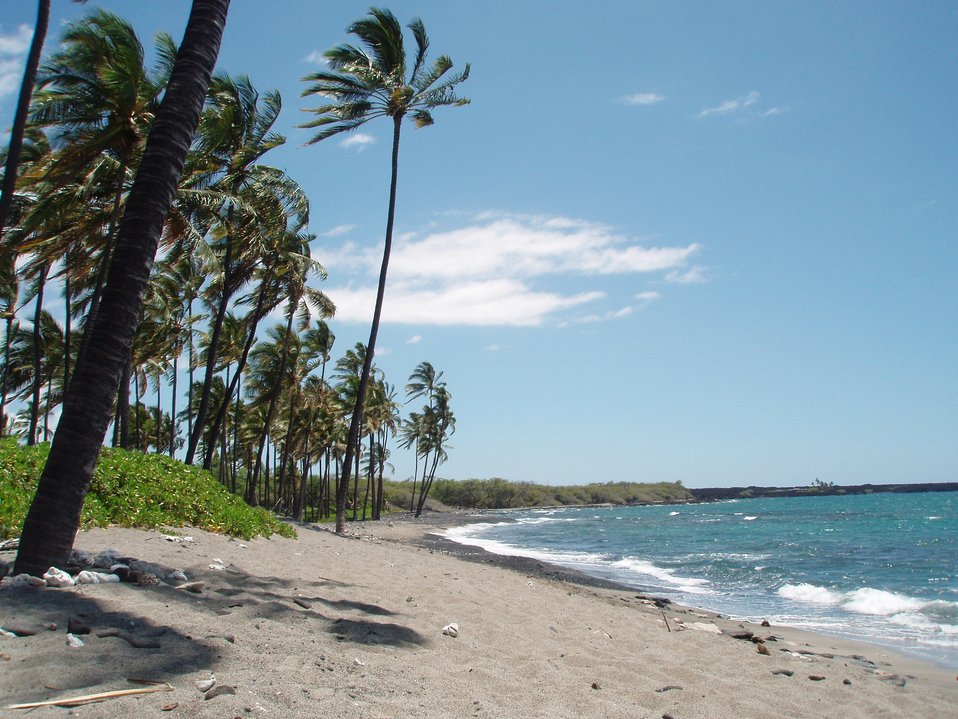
Beach, surf, and palm trees.